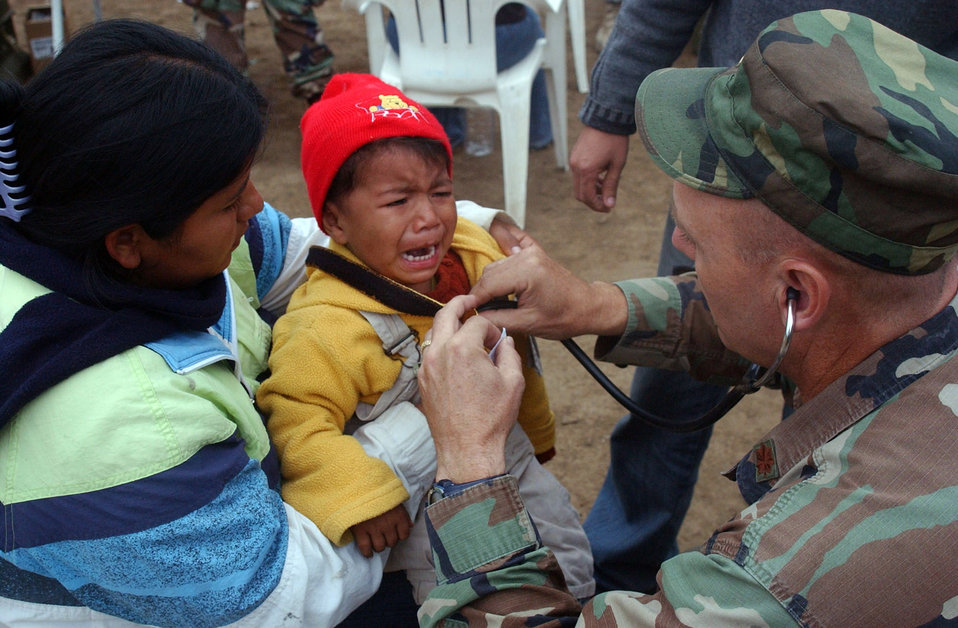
Servicemembers treats 1,300 patients in Peru

Maj. Joseph Hallock checks the heartbeat of one of the patients at the medical relief site Aug. 20 in Pisco, Peru. Medics provided care to more than 1,300 men, women and children. The task force deployed from Soto Cano Air Base Honduras, Aug. 17 to provide medical care to the people of Pisco following an 8.0 magnitude earthquake that devastated the region. Major Hallock is a Joint Task Force-Bravo Medical Element pediatric nurse practitioner.